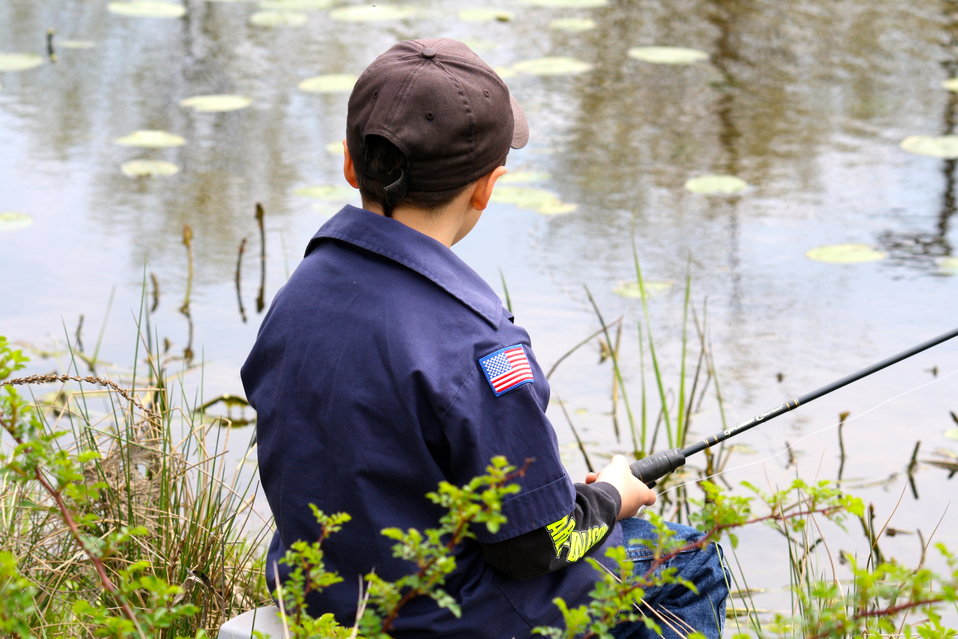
Boy fishing

Fishing Derby held at the USFWS regional office in Hadley, MA on May 7, 2011.